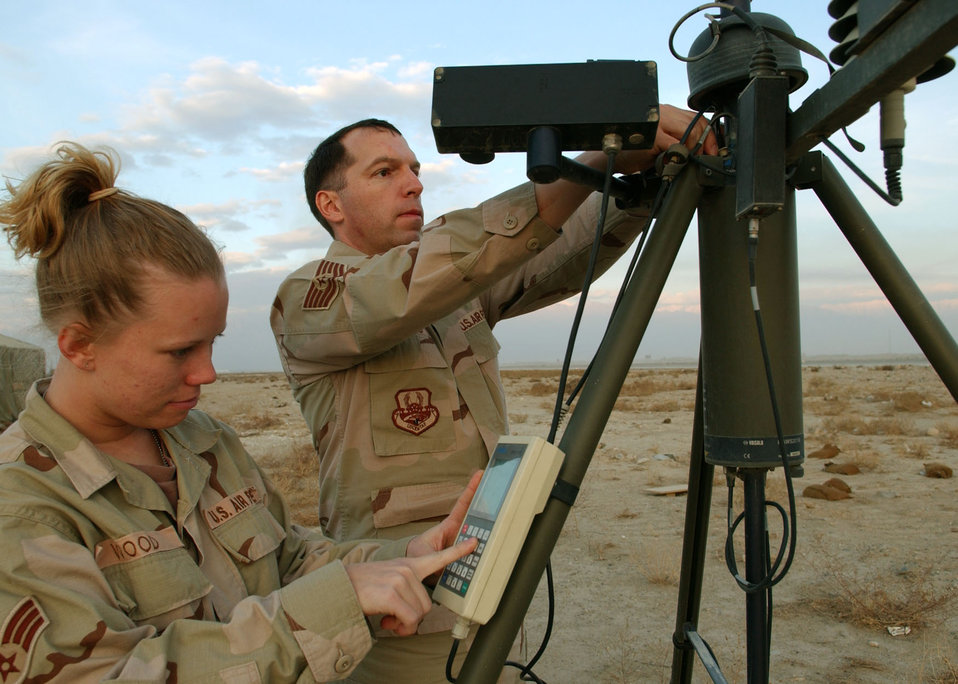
Combat weather team forecasts mission success

BAGRAM AIR BASE, Afghanistan -- Senior Airman Laci Wood collects weather data from a weather observation system while Tech. Sgt. Carlton Hatfield readjusts the system's transmitter. It is one of several methods the 455th Air Expeditionary Wing's combat weather team here uses to gather detailed weather updates hourly for pilots and Combined Joint Task Force 76 operations planners. Airman Wood is deployed from Eglin Air Force Base, Fla., and Sergeant Hatfield is from Shaw AFB, S.C.